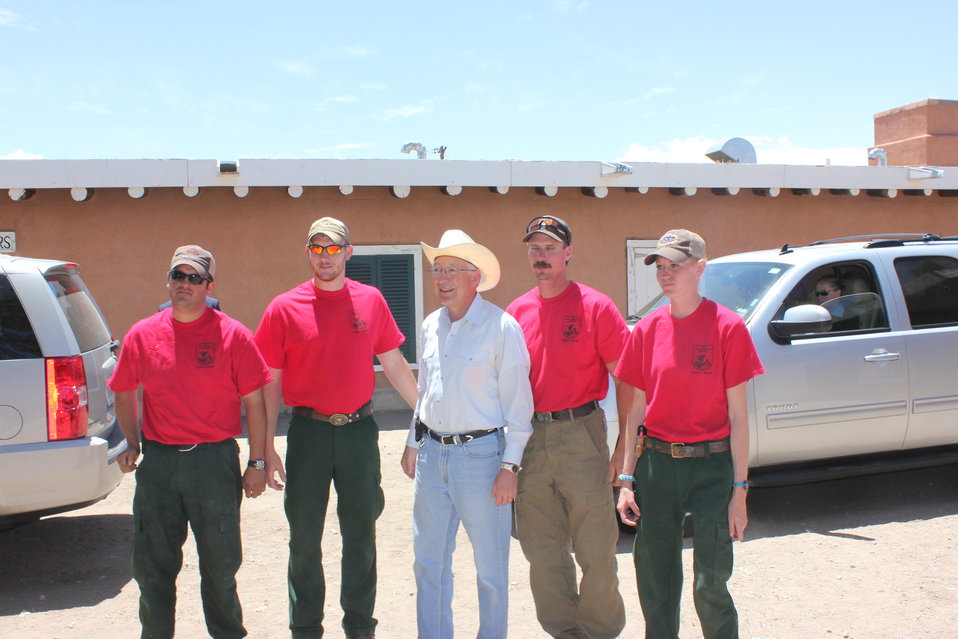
Historic Conservation Easement in Sangre de Cristo Mountains